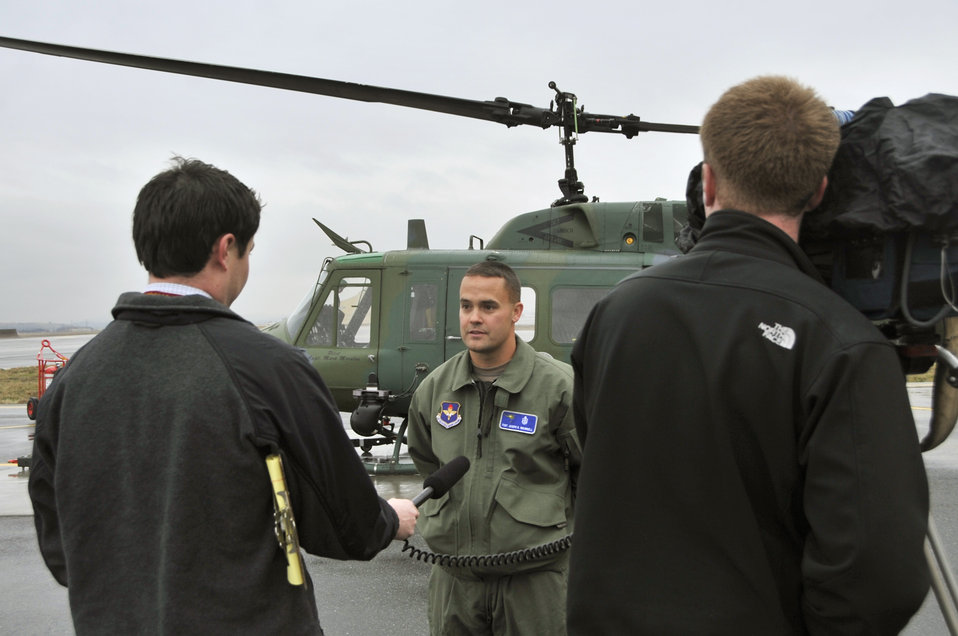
Fairchild rescue crew

Media members interview Tech. Sgt. Joseph Brownell in front of a UH-1N Iroquois helicopter Oct. 28, 2010, at Fairchild Air Force Base, Wash. Sergeant Brownell, a medic with the 36th Rescue Flight, was one of five crew members who rescued six people that day.